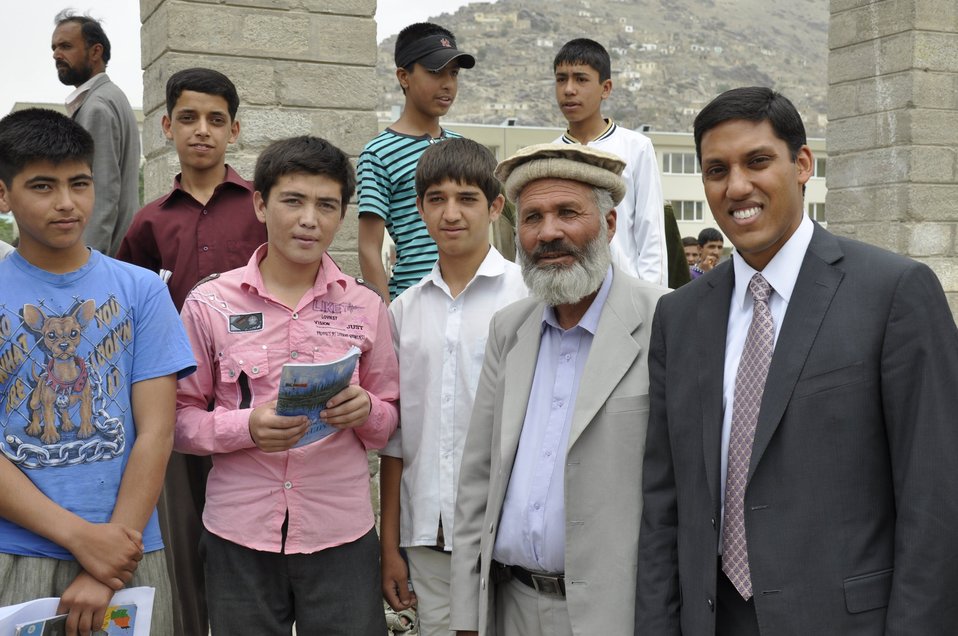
Ghazni High School in Kabul